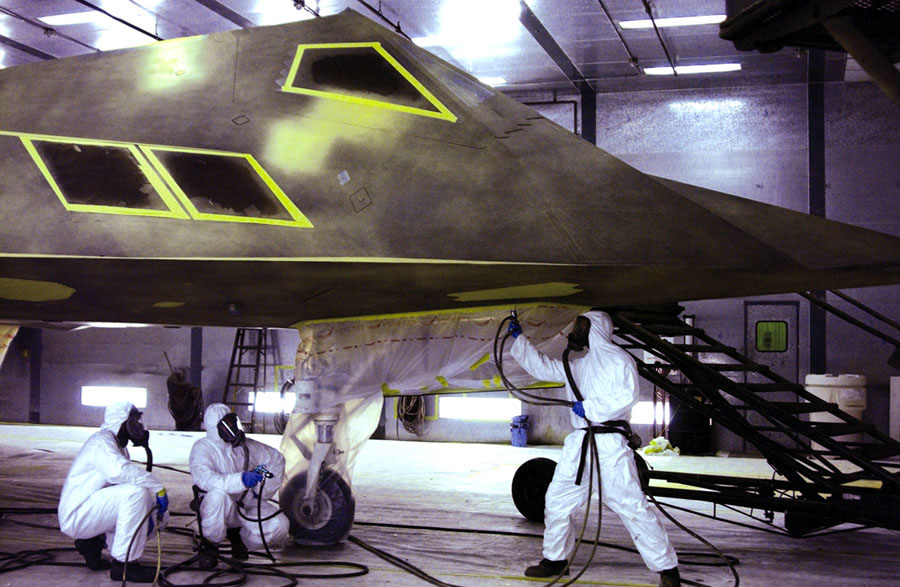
A Nighthawk in Raptor's clothing

HOLLOMAN AIR FORCE BASE, N.M. -- (Left to right) Staff Sgts. Armond Cornin and Casell Davis, and Airman 1st Class Louis Delgado apply a layer of primer to the underbelly of an F-117 Nighthawk before it is painted gray. The aircraft will participate in tests aimed at determining the feasibility of using the F-117 during daytime operations. The airmen are assigned to the 49th Aircraft Maintenance Squadron here.